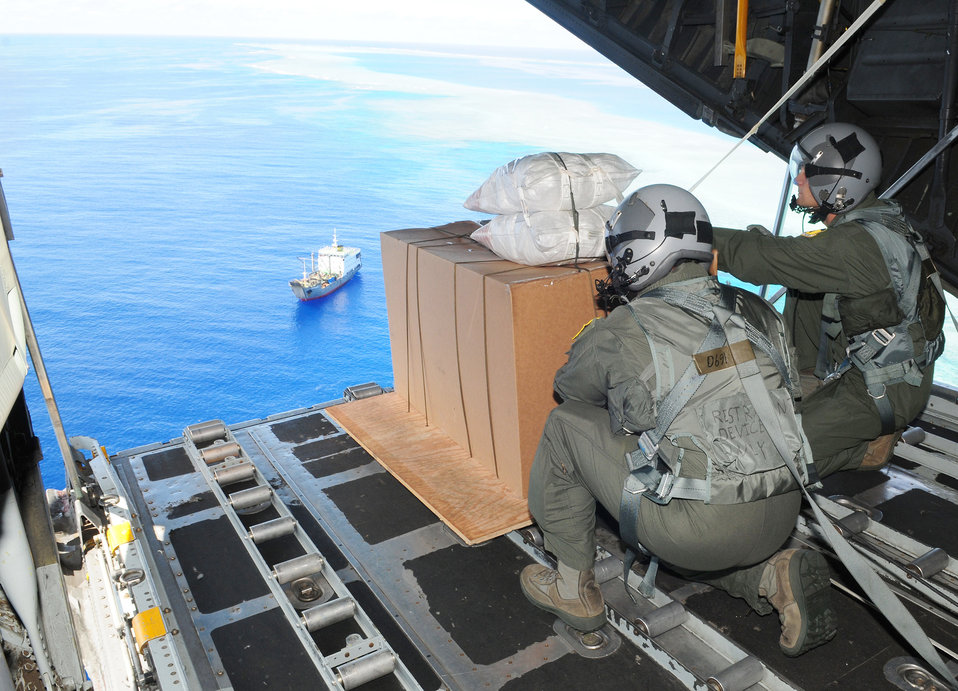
Operation Christmas Drop

Airmen gauge the distance before pushing a box of humanitarian goods out of a C-130 Hercules call sign “Santa 23” to its drop zone during Operation Christmas Drop Dec. 14, 2010, near Yap Islands, Northern Marianas. Operation Christmas Drop began in 1952 and is the Air Force’s longest-running humanitarian operation. Airmen today continue the tradition delivering supplies to remote islands of the Commonwealth of the Northern Marianas Islands, Yap, Palau, Chuuk and Pohnpei. The Airmen are from the 36th Airlift Squadron at Yokota Air Base, Japan.